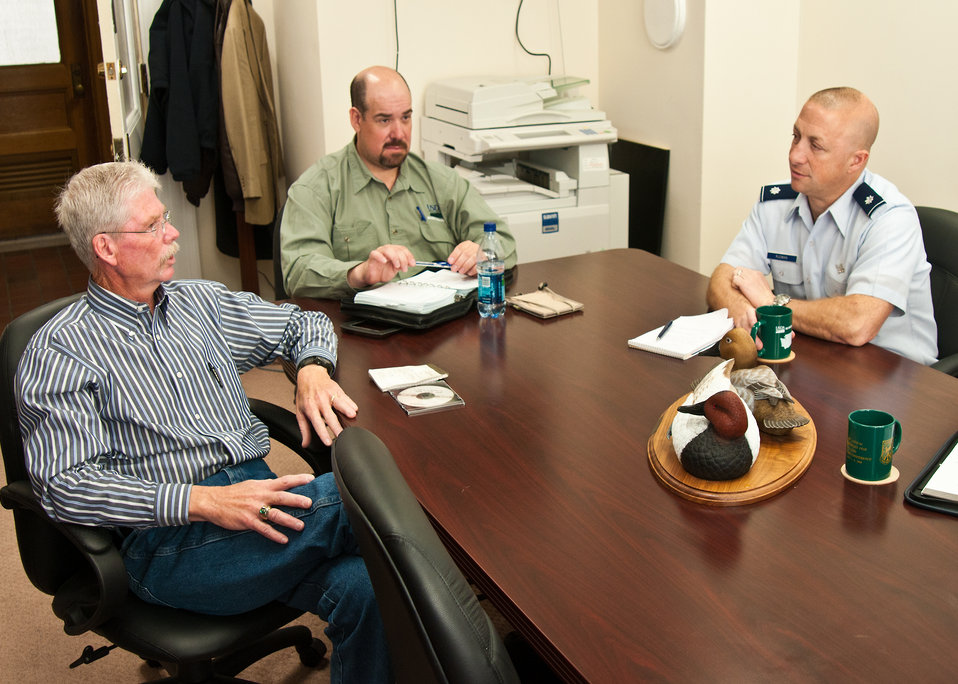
110308 APHIS RBN 2579

Clockwise from left: George Graves, Wildlife Biologist, United States Department of Agriculture, Animal and Plant Health Inspection Service, Wildlife Services, Boise, Idaho, Chris Bowser, Wildlife Biologist, Logistical Support, USDA, APHIS, Wildlife Services, Lt. Col. Gary Rudman, Deputy Director, Safety, United States Air Force Central discuss Bowser and Graves’ experience on their detail to Iraq participating in a program initiated by USDA, APHIS and US Air Force Central to deploy APHIS wildlife biologists to assist in keeping runway operations free of wildlife, at the U.S. Department of Agriculture in Washington, D.C., on Tuesday, March 8, 2011.